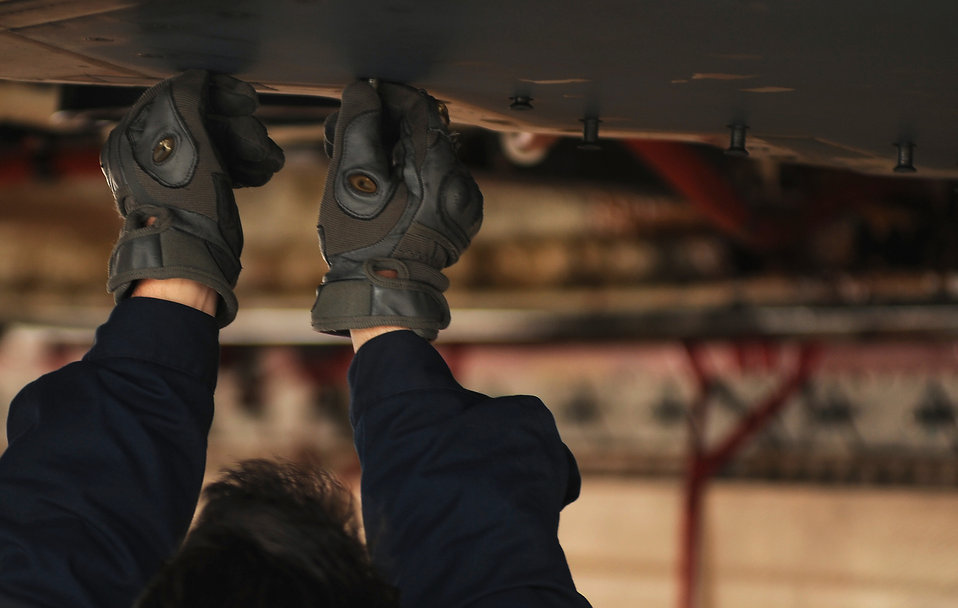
Operation Odyssey Dawn

WHITEMAN AIR FORCE BASE Mo. 509th Aircraft Maintenance Squadron, maintainers and crew chiefs, prepare B-2 Stealth Bombers for Operation Odyssey Dawn March 19, 2011.